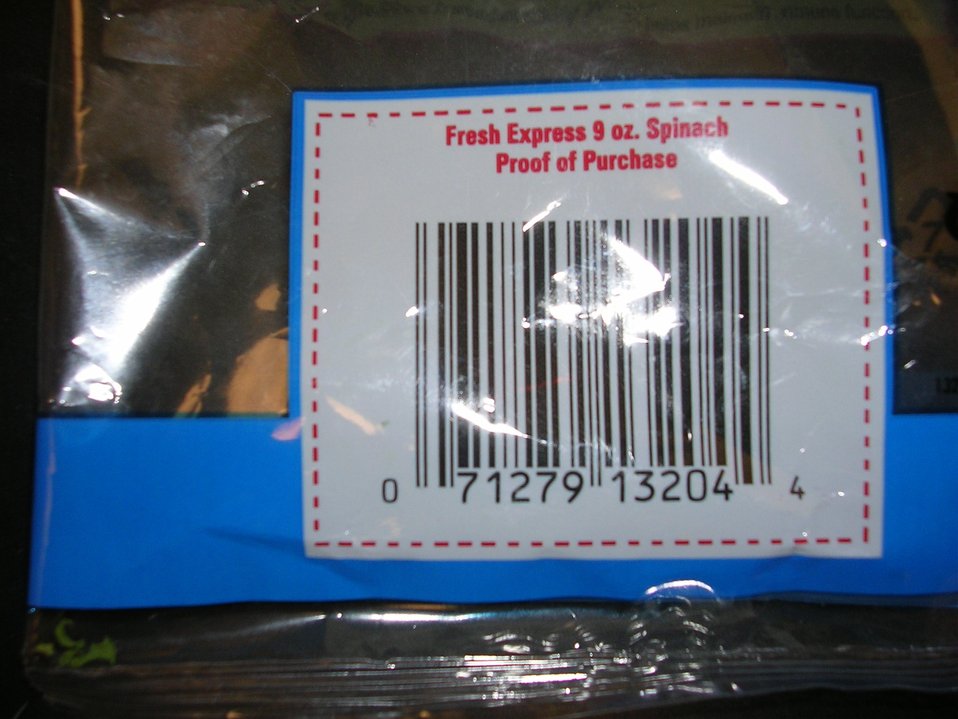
RECALLED - Fresh Express Spinach

April 5, 2011 - Product Recall - Fresh Express Spinach.